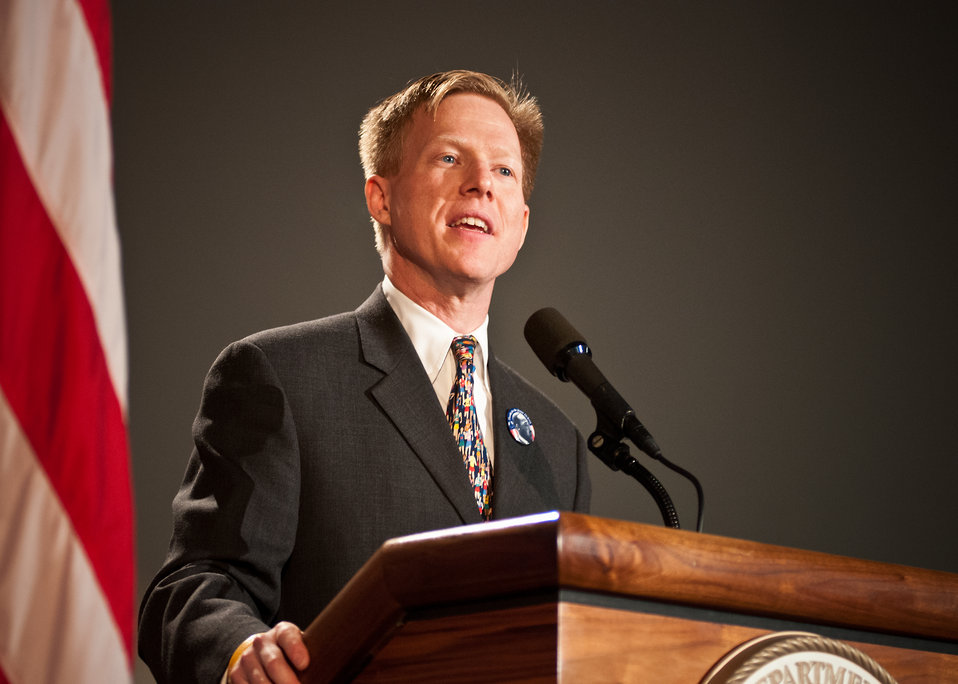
Max Finberg, Director, Faith Based and Neighborhood Partnerships, Master of Ceremonies reads a children’s book of Dr. Martin Luther King’s life to the audience during the National Service Day and Martin Luther King Celebration in honor of Dr. Martin Luther King Jr.’s contributions to the Civil Rights Movement at the United States Department of Agriculture in Washington, D.C., Thursday, January 12, 2012.